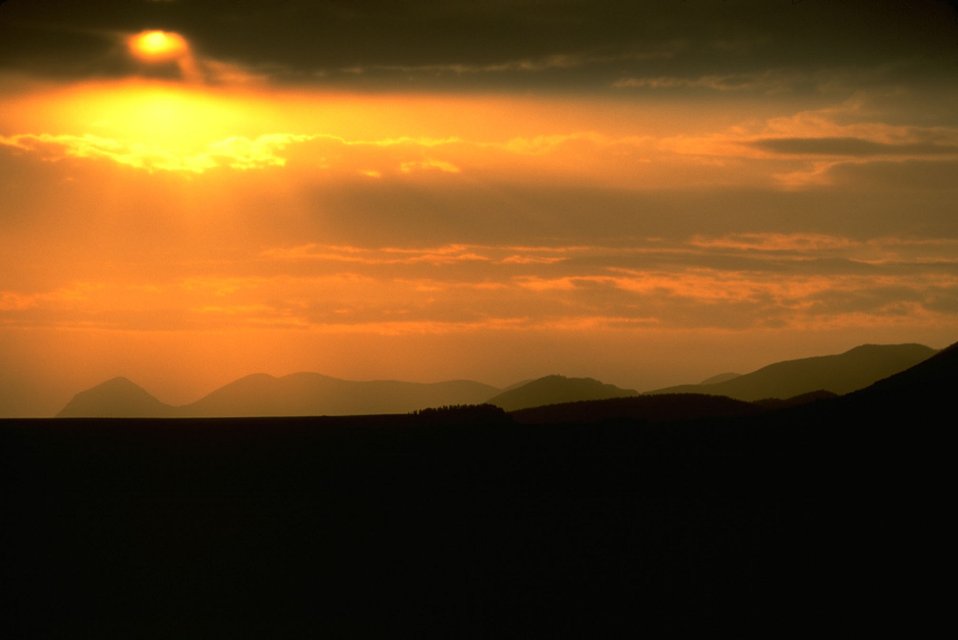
Sunset over the Missouri Breaks